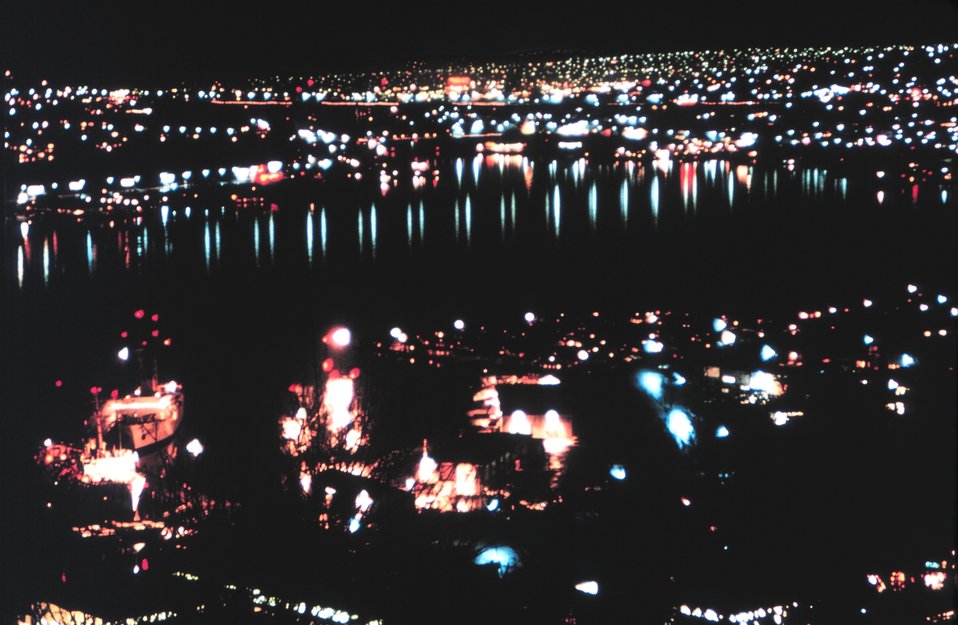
Lake Union at night